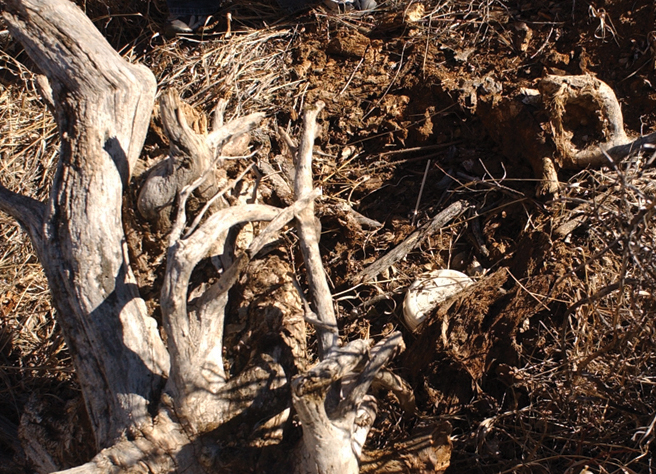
GPS satellites help outdoor hobbyists link up

MONTANA -- Caches tend to be located under rocks, bushes or fallen trees.